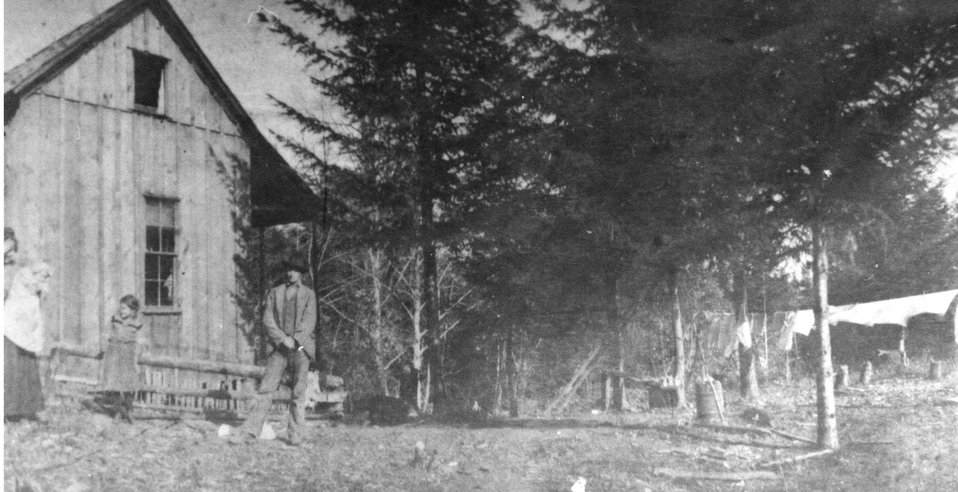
Tom Billings house at Merial.